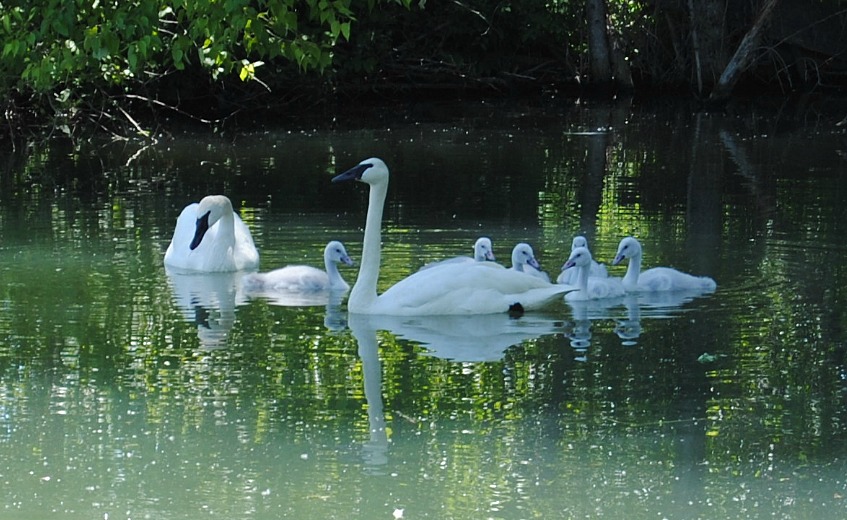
Week 2, Montana Waterfowl Foundation, Ronan, MT

A pair of swans with their cygnets at the Montana Waterfowl Foundation in Ronan, MT.